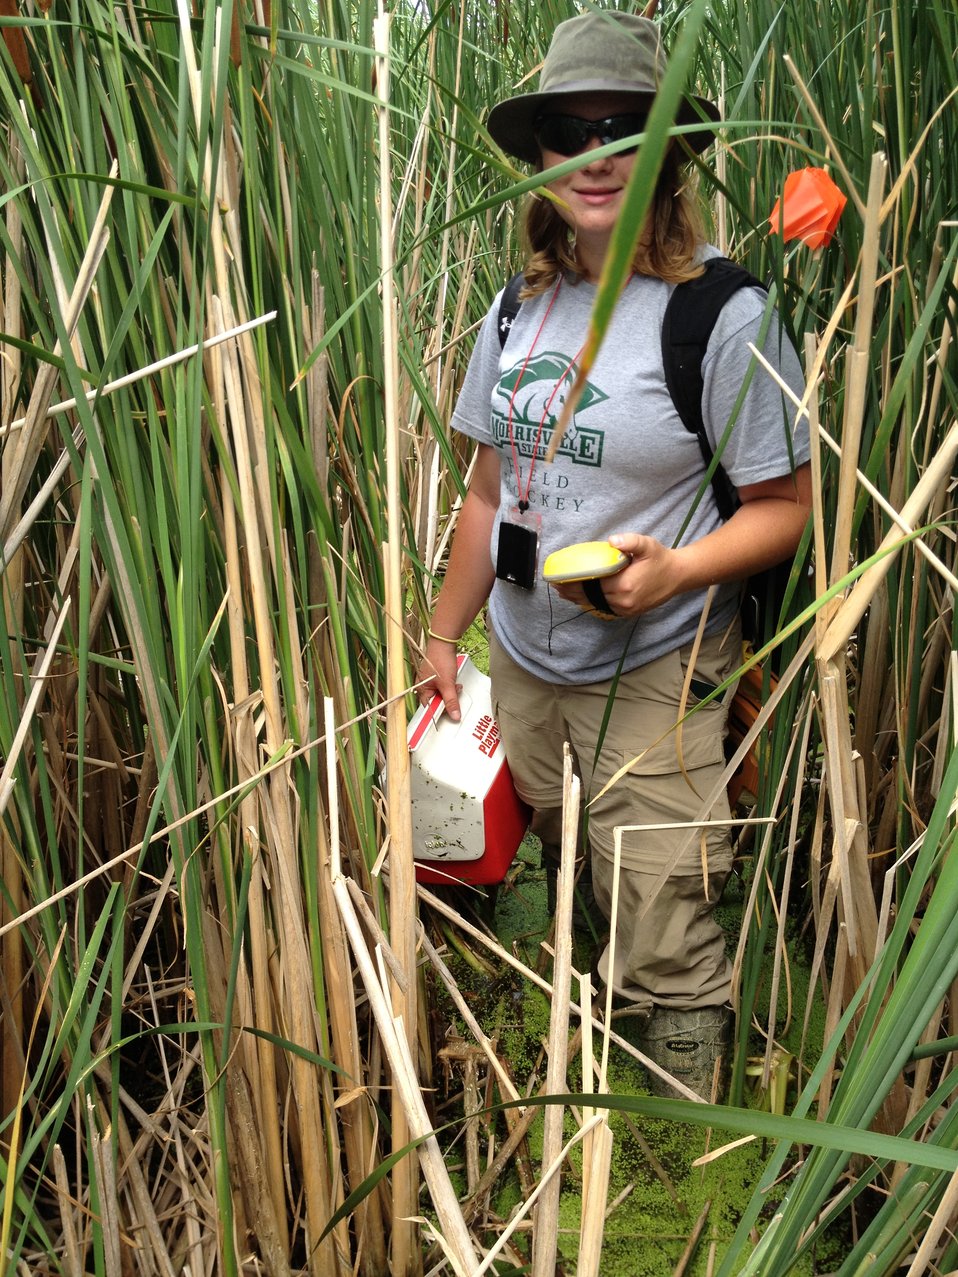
SCA Intern Posing

SCA Intern Jennifer May doing some field work.